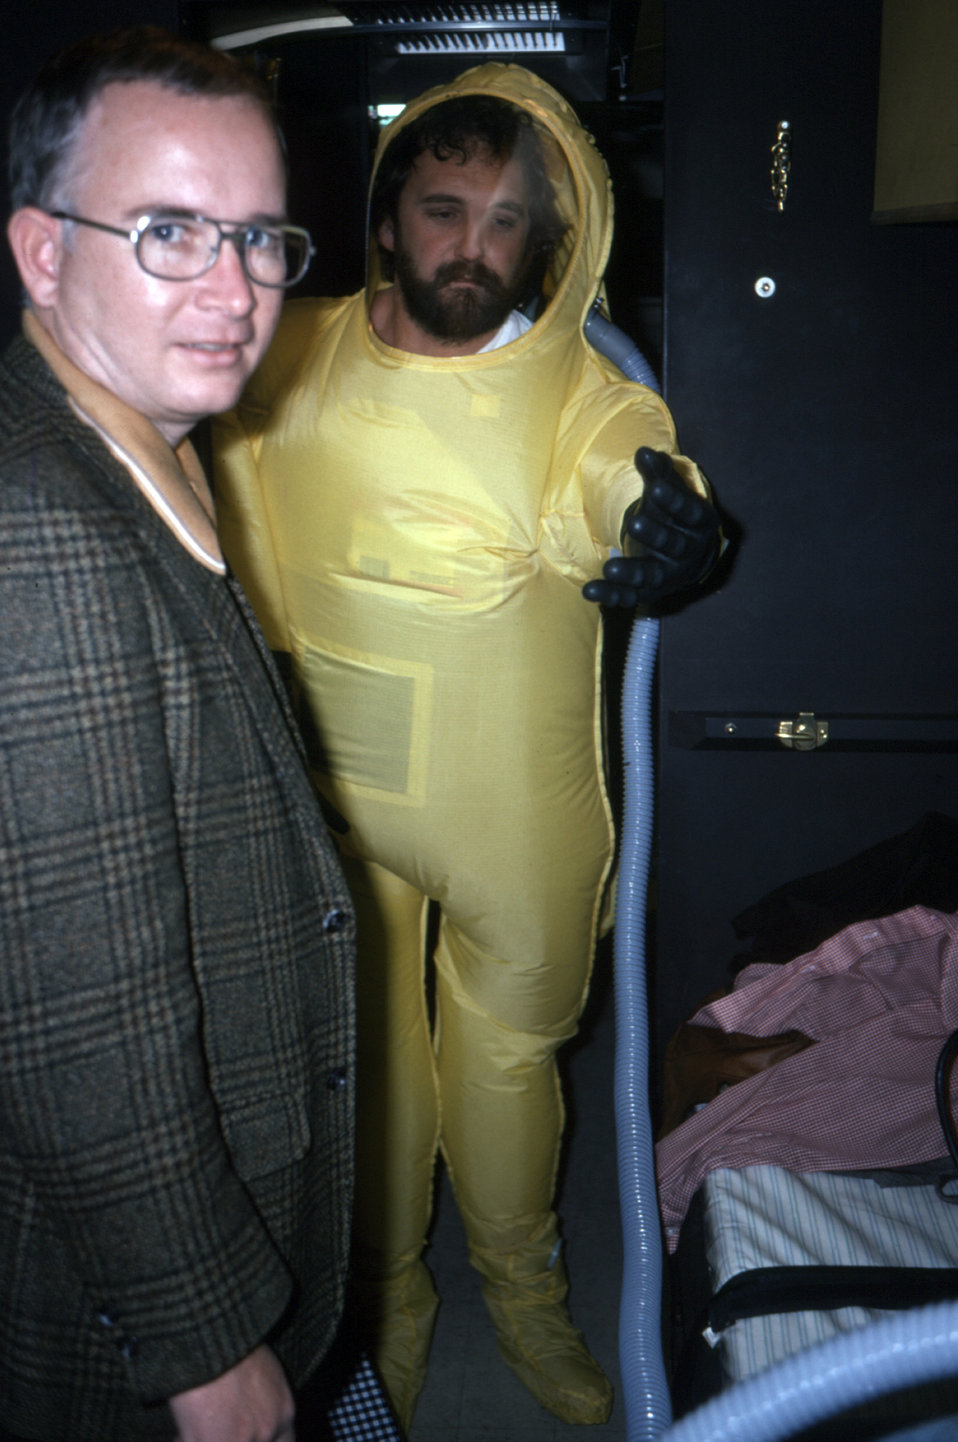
This photograph shows one of the CDC's first lab containment suits worn by a technician inside the animal laboratory during Lassa fever and Ebola hemorrhagic fever research activities.